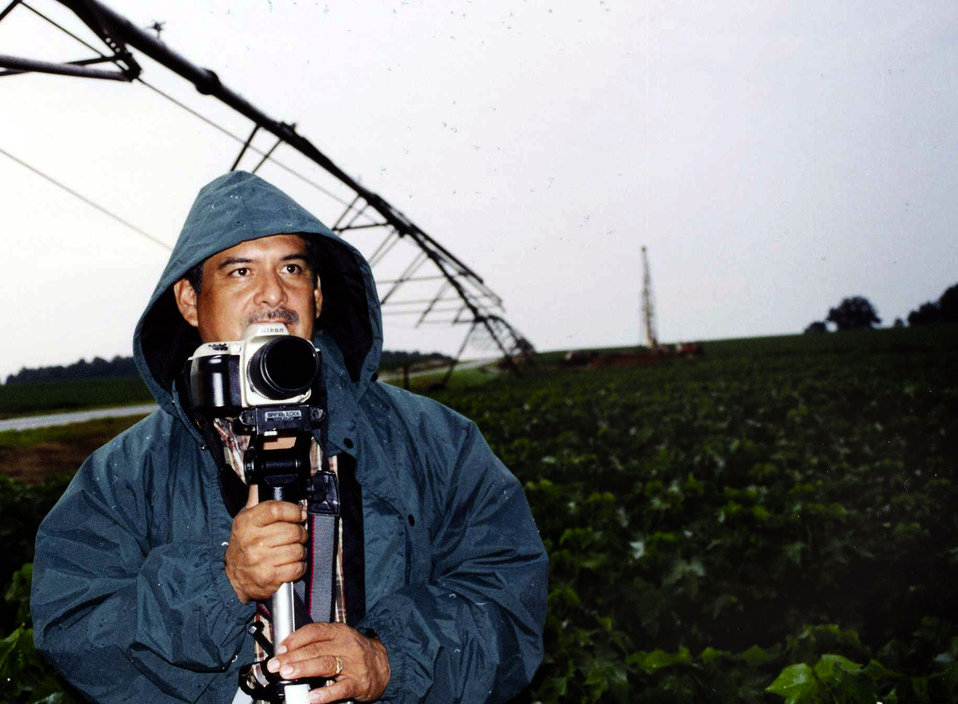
Catching the perfect storm

WARNER ROBINS, Ga. -- Edward Aspera Jr. waits for the perfect opportunity to take a picture of a storm. He has been chasing storms since 1986 when he served in the Marine Corps, and he is now an audiovisual specialist with the 78th Air Base Wing at nearby Robins Air Force Base.